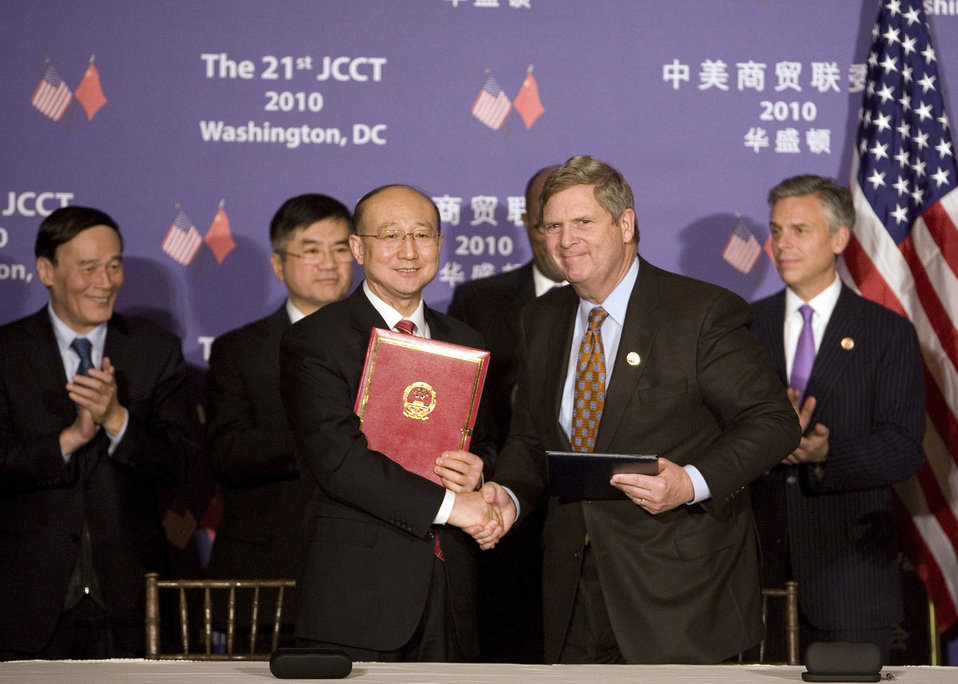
Chinese General Administration of Quality Suprvision, Inspection, and Quaraine Minister Zhi Shuping and Agriculture Secretary Tom Vilsack shake hands after signing a Memorandum of Understanding (MOU) between China and United States at the Commerce Department in Washington, D.C., on Wednesday, December 15, 2010. The MOU was a result of the 21st session of the U.S. - China Joint Commission on Commerce and Trade (JCCT). The JCCT resulted in an agreement with China for significant intellectual property rights enforcement initiatives, market opening, and revisions to its indigenous innovation policies that will help boost U.S. exports. (In background L to R Chinese Minister of Commerce Chen Deming, Chinese Vice Premier Wang Qishan, Commerce Secretary Gary Locke, U.S. Trade Representative Ron KIrk, and U. S. Ambassador to China Jon Huntsman). USDA photo 10di1573-8144.